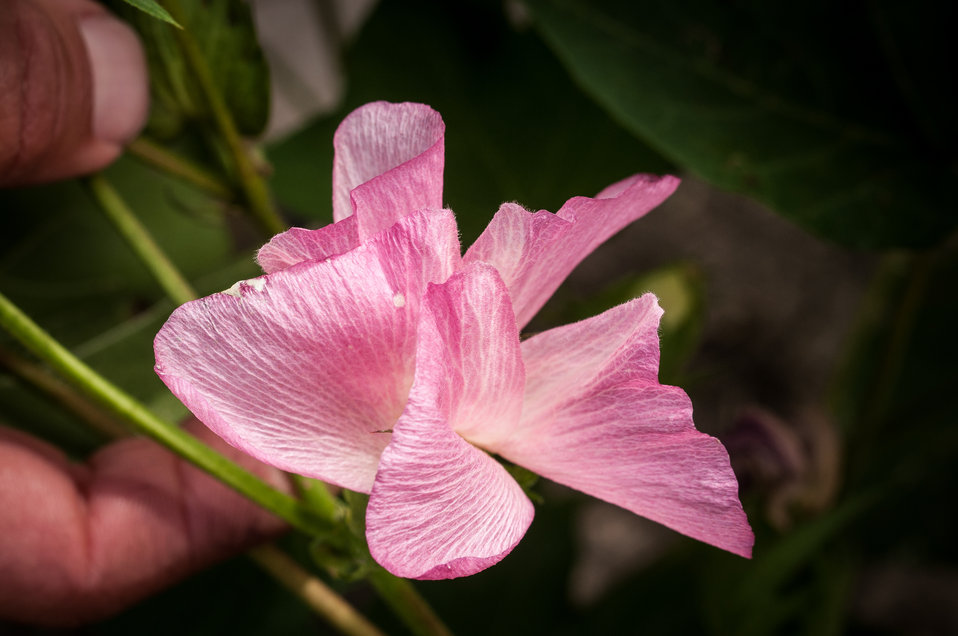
Michael Popp (pronounced Pope) shows cotton plants at various stages of development at Popp Farms 05 El Campo, TX on Jun. 20, 2013. Michael is a junior partner in the 2,400-acre operation, which grows cotton and milo (grain sorghum). The cotton flower starts as a square bud, then a white flower blossoms, turning red, then falls off leaving the boll to grow and eventually opens to reveal the cotton locks, ready to be harvested and processed in a cotton gin. Flowers first occur at the bottom and mature upwards along the plant. The farms are part of the United Agricultural Cooperative, Incorporated.